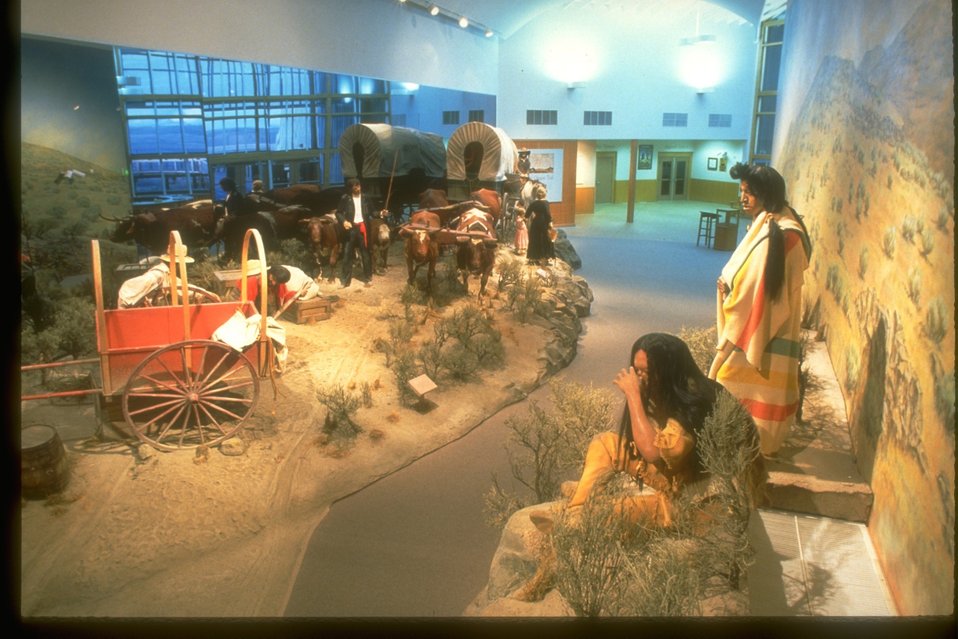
NHOTIC gallery with a replica of the Oregon Trail and its early settlers, travelers and Native Americans.